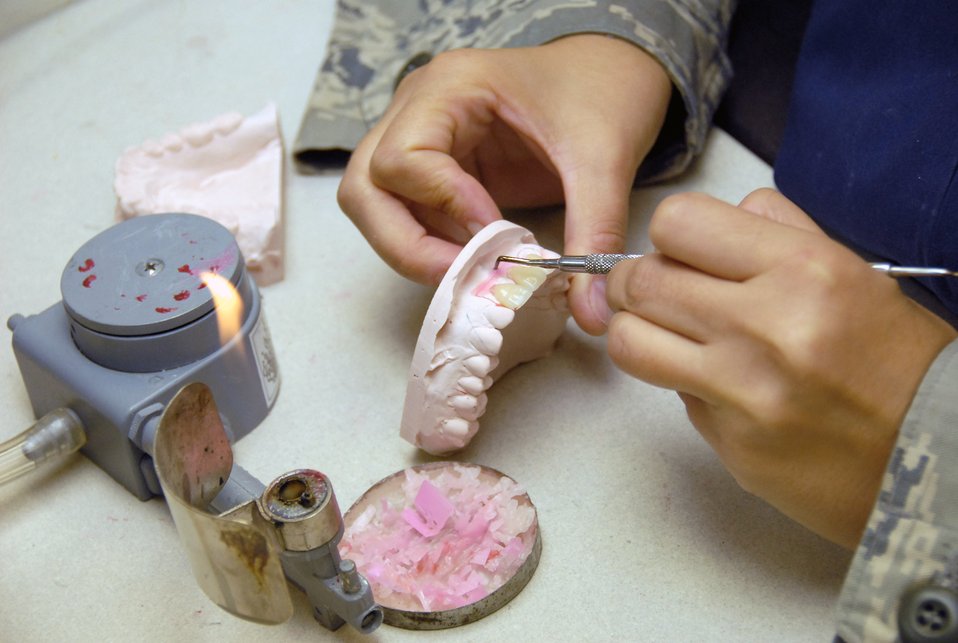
Kadena's labs sculpt bright smiles

Staff Sgt. Andi Stevenson applies paint to a metal substructure to make a crown porcelain Aug. 19 at the area dental lab on Kadena Air Base, Japan. The area dental lab services 52 U.S. Pacific Command installations in Korea, Japan, Guam, Alaska and Navy ships at sea. Sergeant Stevenson is a dental lab technician at Kadena AB.